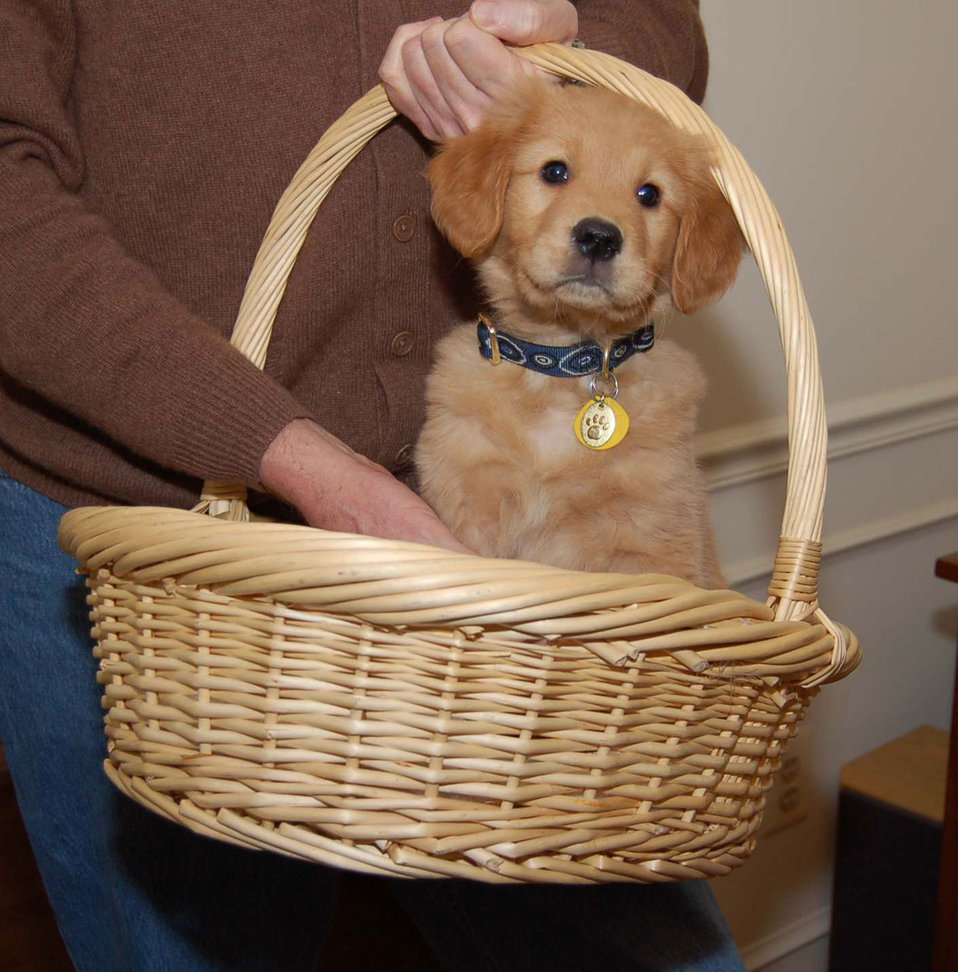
Golden retriever

8 week old golden retriever in a basket.